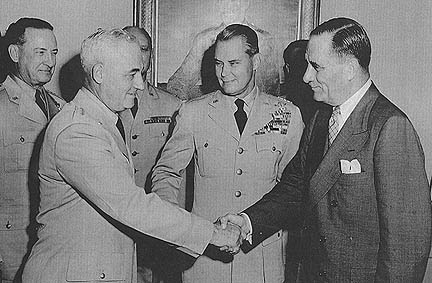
Harold E. Talbott

1950's -- General Nathan F. Twining, left, is congratulated by Secretary of the Air Force Harold E. Talbott, right, after being sworn as Air Force Chief of Staff. Looking on are, left to right: General Thomas D. White, Air Force Vice Chief of Staff; Colonel K. E. Thiebaud, Air Adjutant General and General Hoyt S. Vandenberg, retiring Chief of Staff. General Twining was sworn in during ceremonies at the Pentagon following the retiring ceremonies for General Vandenberg at Bolling Air Force Base, Washington, D.C., July 1, 1953.